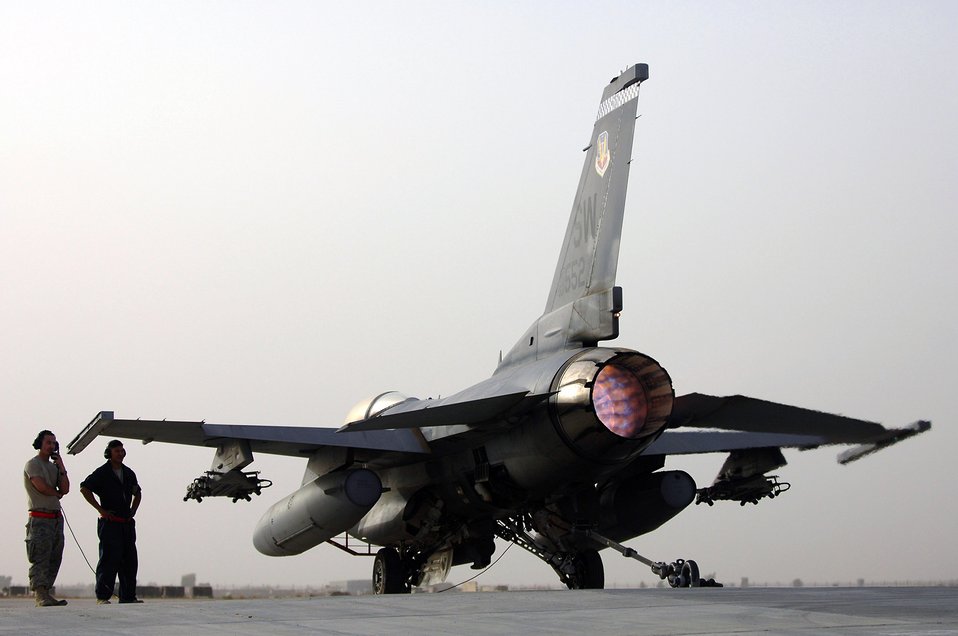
Gentlemen, start your engines!

Senior Airman Graham Willis and Staff Sgt. Ferdinand Brown watch as an F-16 Fighting Falcon roars in full afterburner during an engine run up July 16 at Joint Base Balad, Iraq. During a run up, mechanics test all of the engine settings and gauges that pilot use during combat missions. Airman Willis and Sergeant Brown are 77th Aircraft Maintenance Unit engine mechanics deployed from Shaw Air Force Base, S.C.